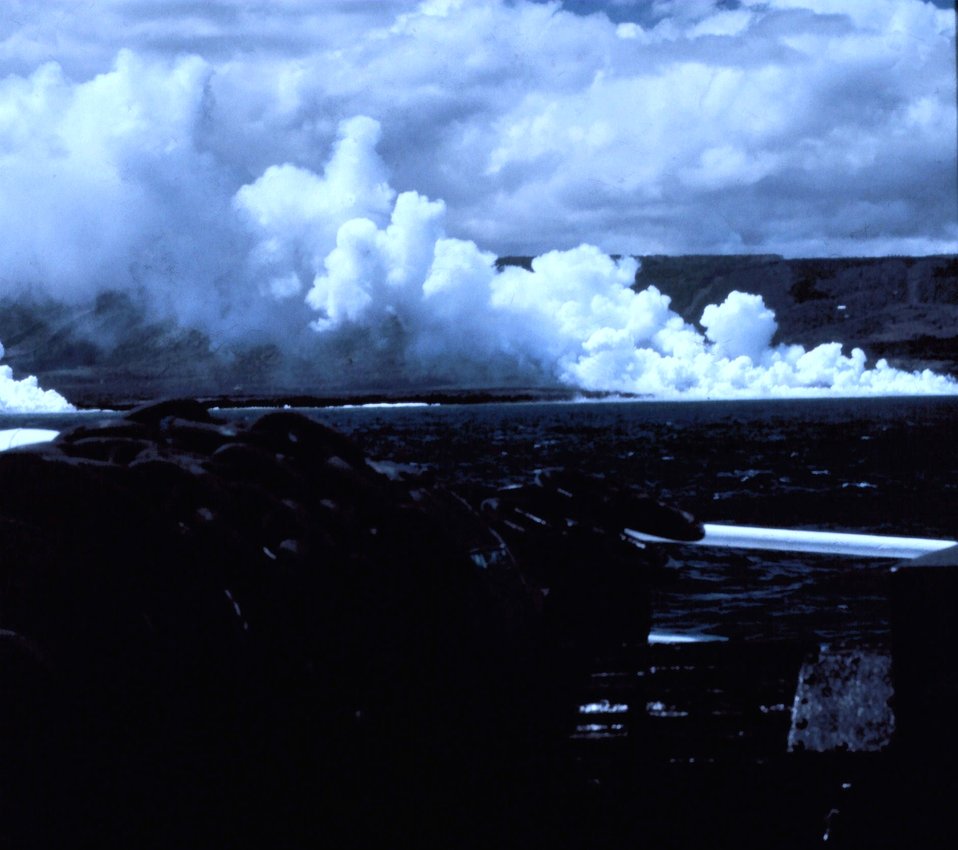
Steam formed by lava entering the sea